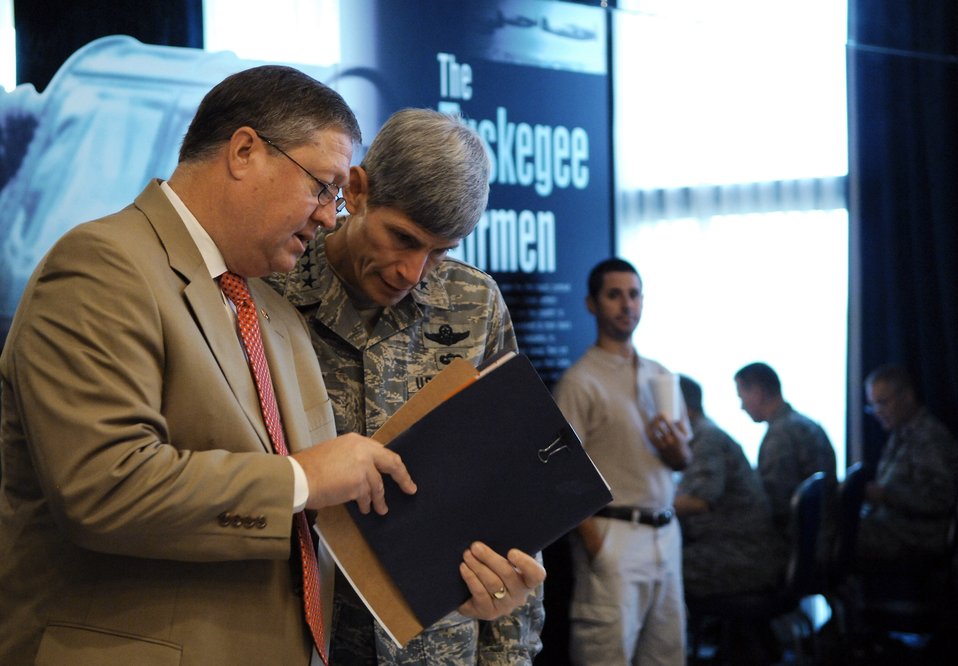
Determining a way ahead for the Air Force

Acting Secretary of the Air Force Michael B. Donley and Chief of Staff Gen. Norton A. Schwartz discuss conference items Aug. 27, during a strategic summit at Bolling Air Force Base, D.C.